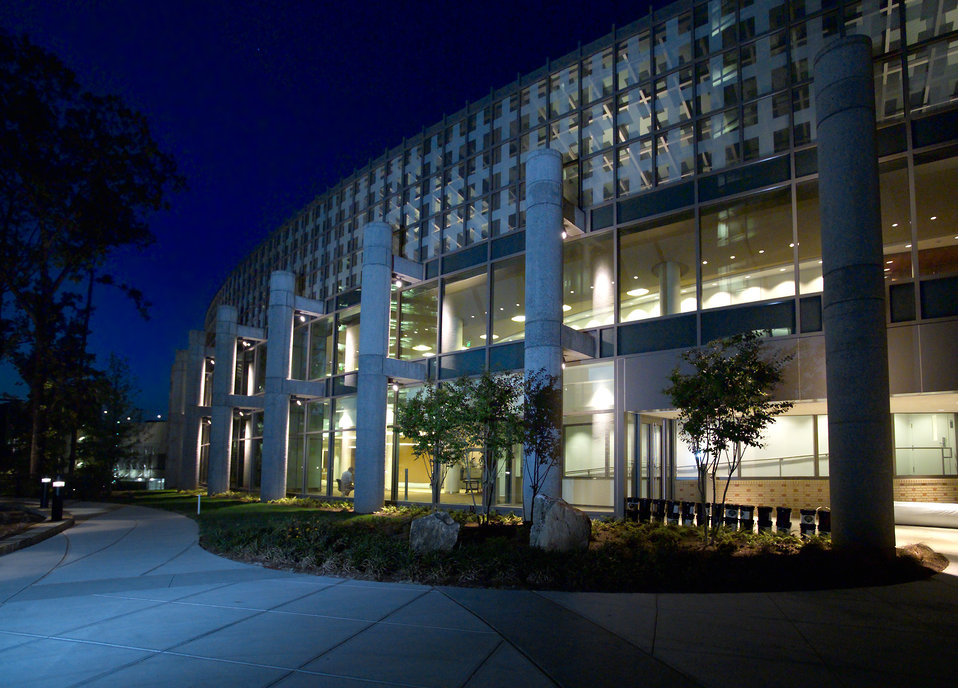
This photograph was taken during the evening hours on the Center for Disease Control's (CDC) Roybal Campus located in Atlanta, Georgia. The image depicted the exterior of the new Tom Harkin Global Communications Center.